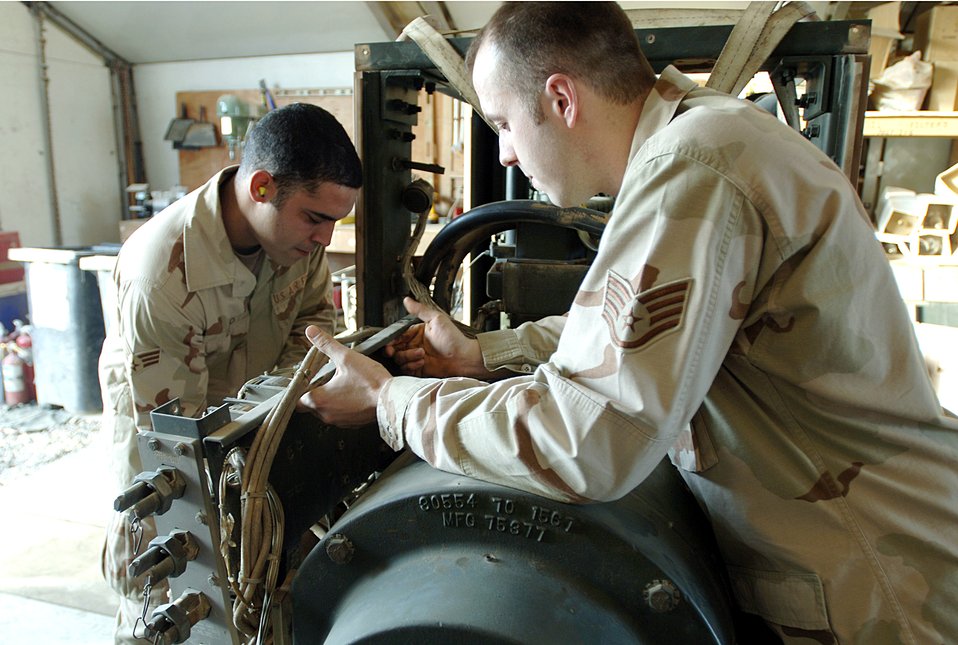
Operation Iraqi Freedom

ALI BASE, Iraq -- Senior Airman Jamie Lugo (left) and Staff Sgt. Chad Poeth change the alternator on a generator here. They are assigned to the 407th Expeditionary Civil Engineer Squadron power production element.